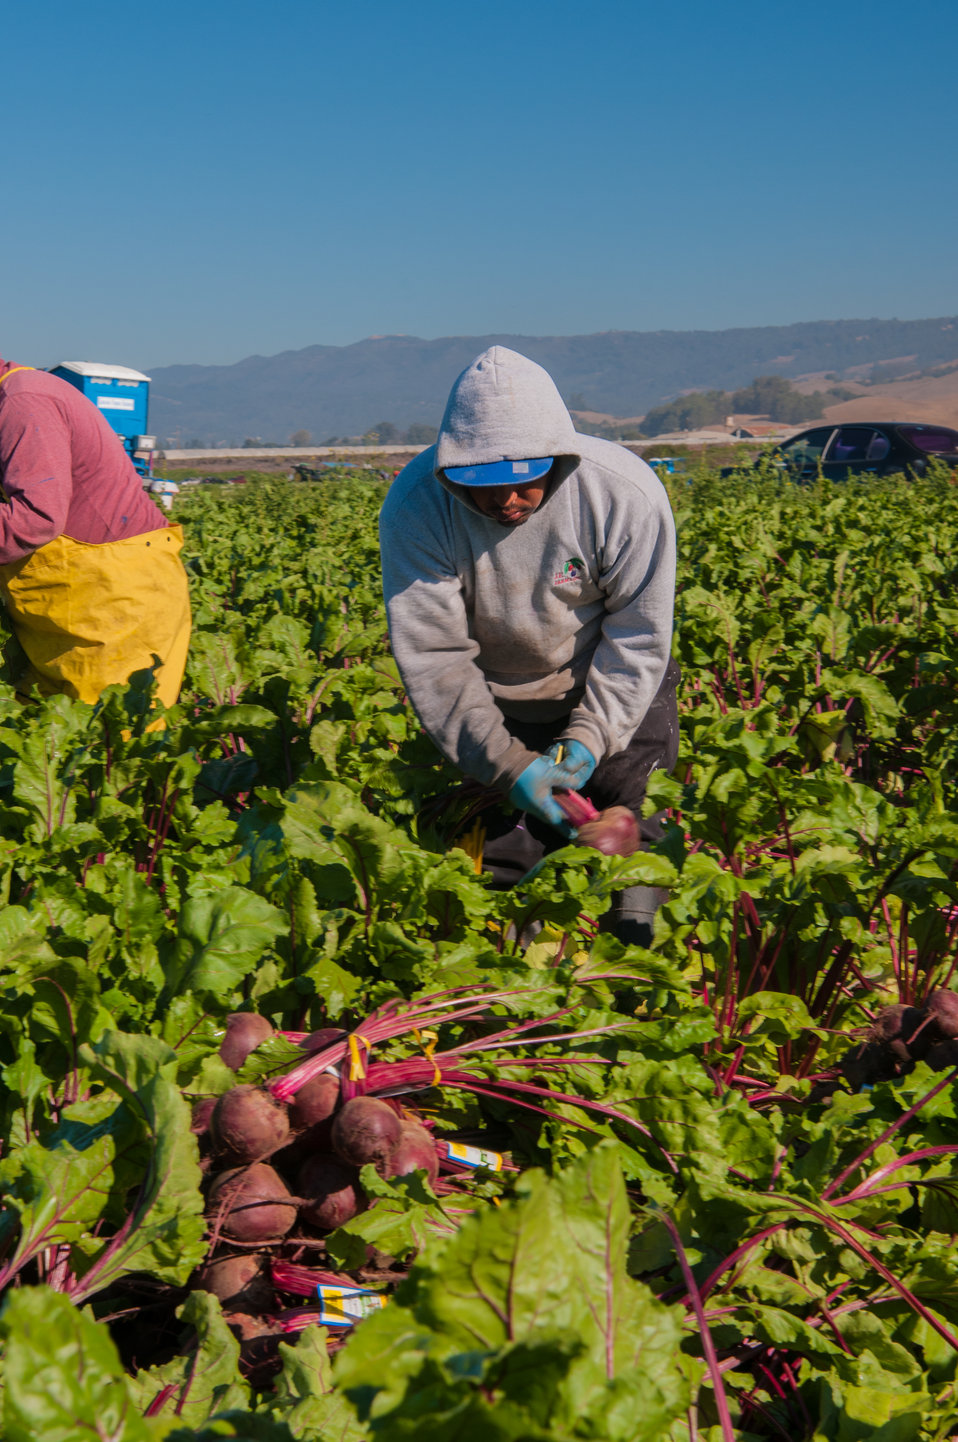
Migrant workers harvest Beets at Lakeside Organic Gardens in Watsonville, CA on Tuesday, Aug. 27, 2013.